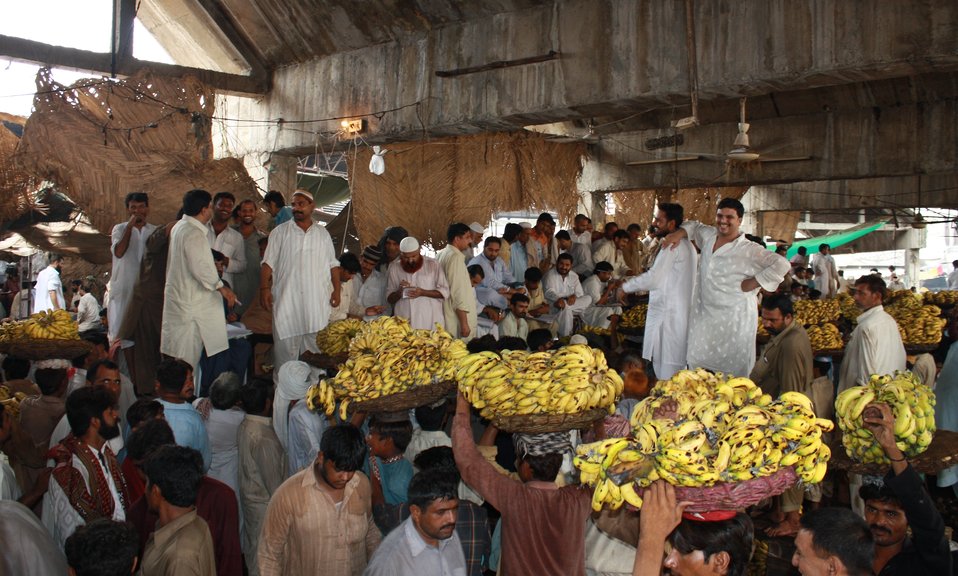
USAID Firms Project's Agriculture Marketing Reforms - 2

Traders and commission agents participate in the fruit action at the start of a busy day at the wholesale fruit mandi as soon as the trucks unload the fresh produce from the farms. Retailers can be seen displaying their fresh fruits for the encroachers who are busy negotiating rates.